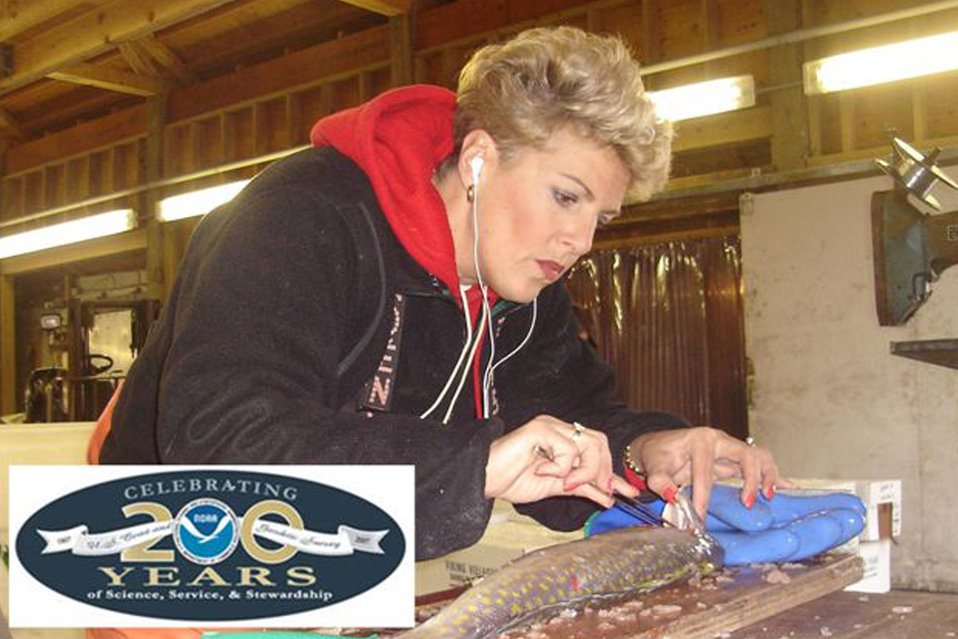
NOAA Port Agent Joanne Pellegrino, stationed in Toms River, New Jersey, removes an otolith (ear bone) from a Golden Tilefish, as part of a biological sampling exercise. Port Agents visit docks, where fish are off loaded by commercial fishers, to take samples, measure and weigh the fish.